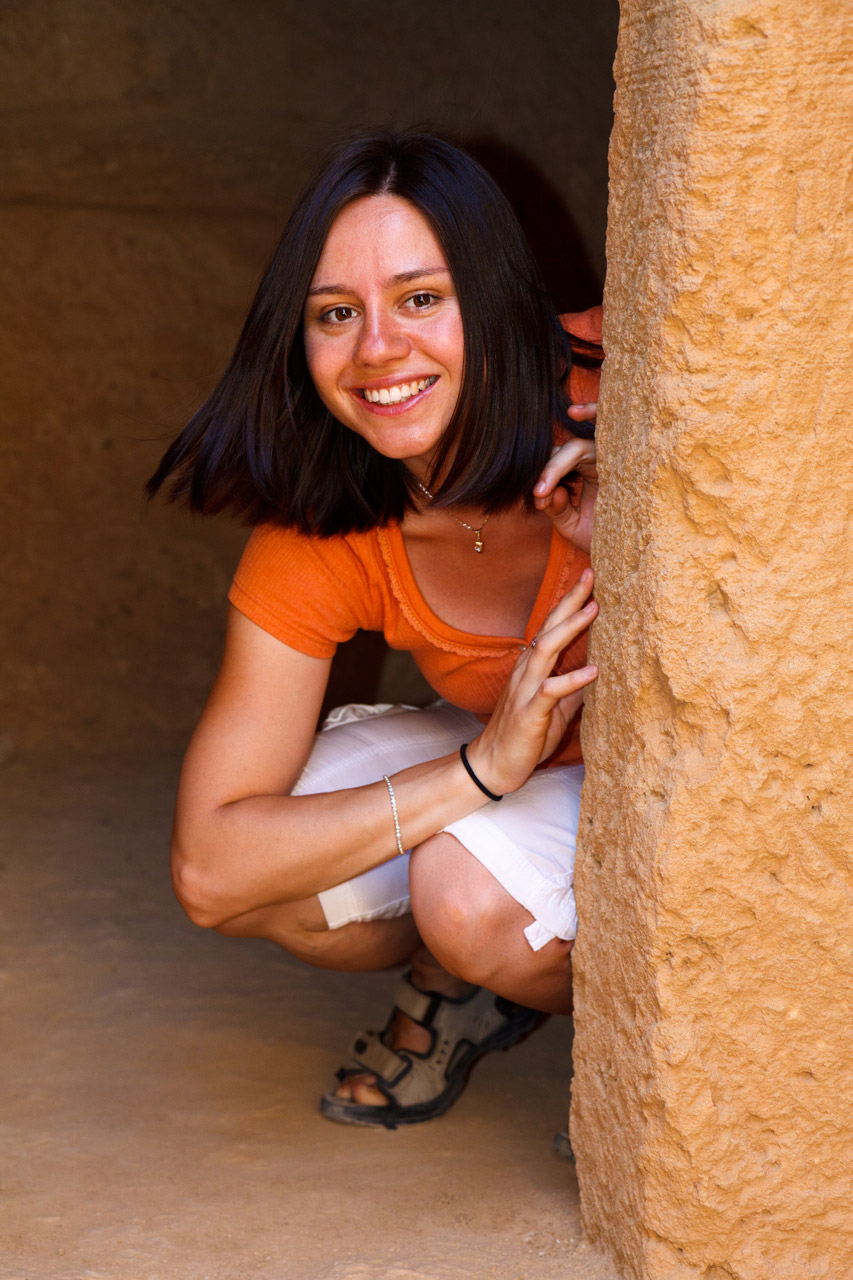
Peekaboo

Young woman peeking.